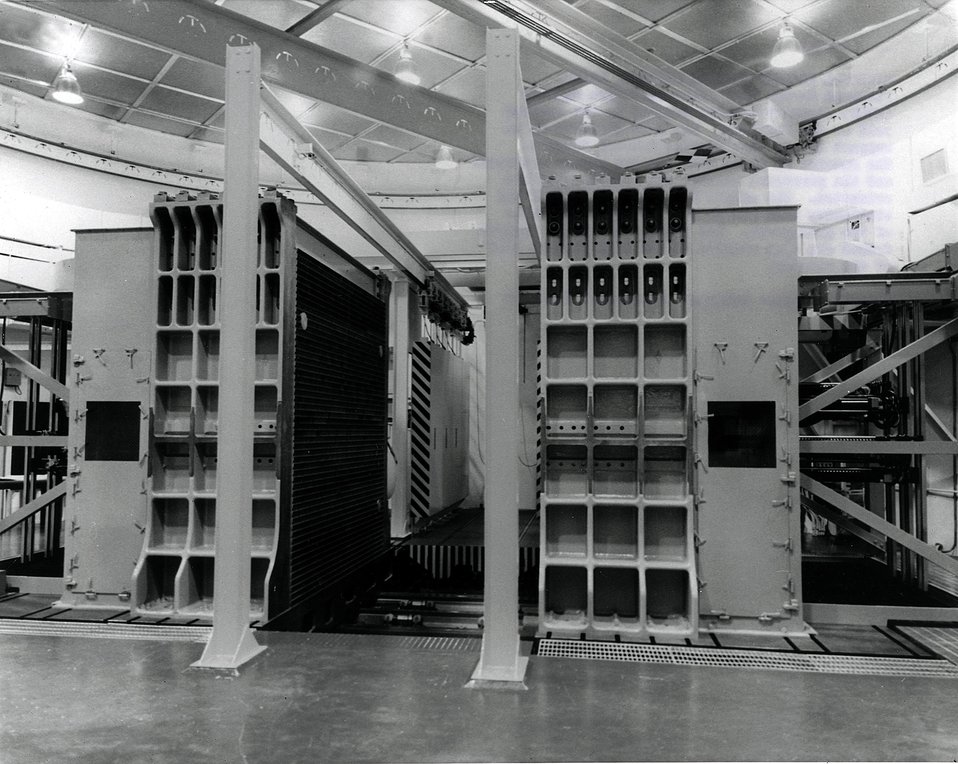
A scientist inserts a plutonium fuel drawer in the ZPPR. c.1970